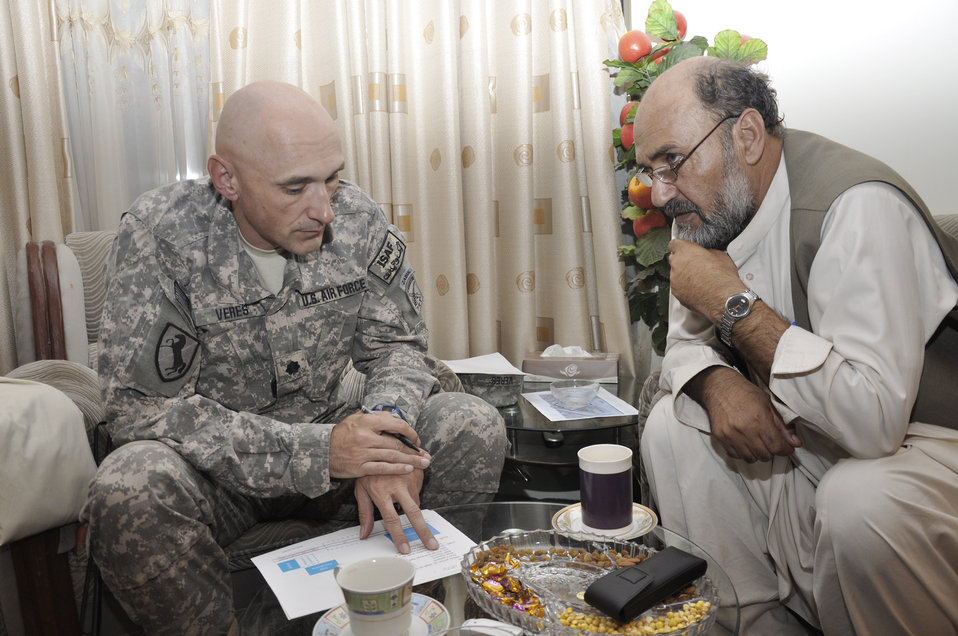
Servicemembers help reconnect Afghan, government

Lt. Col. Andy Veres and Gov. Mohammad Ashraf Naseri discusses future plans on improving the province Aug. 23, 2009, in the Zabul Province, Afghanistan. Colonel Veres is the Provincial Reconstruction Team-Zabul commander, and is a native of Melbourne, Fla. PRT-Zabul is a civil and military organization that brings reconstruction, development, governance and security to the province and work side-by-side with the provincial government to reconnect it with their people.